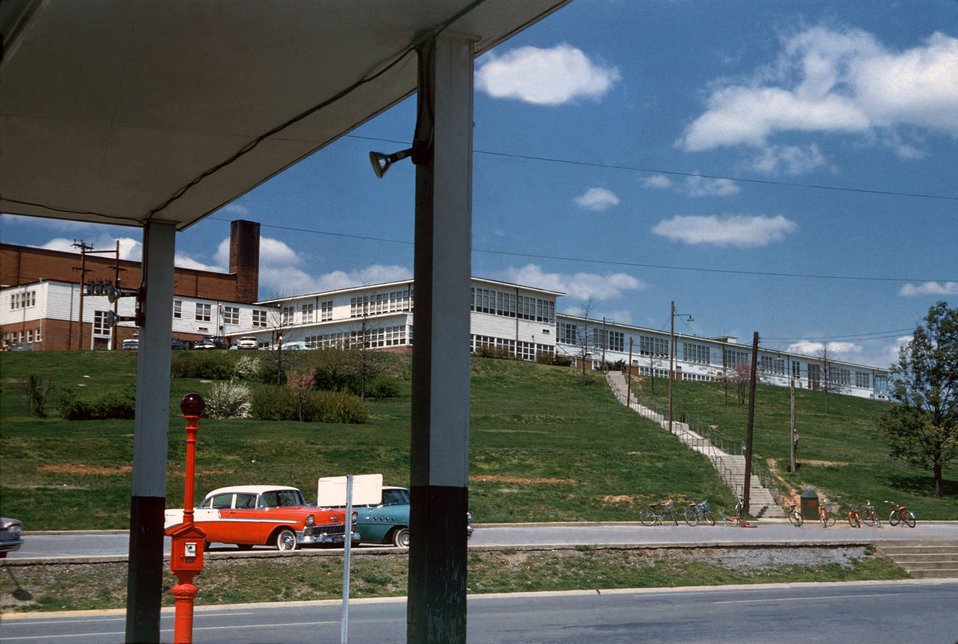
Jefferson Junior High Oak Ridge

DOE photo by Ed WestcottJefferson Junior High School Oak Ridge Tennessee April 1961